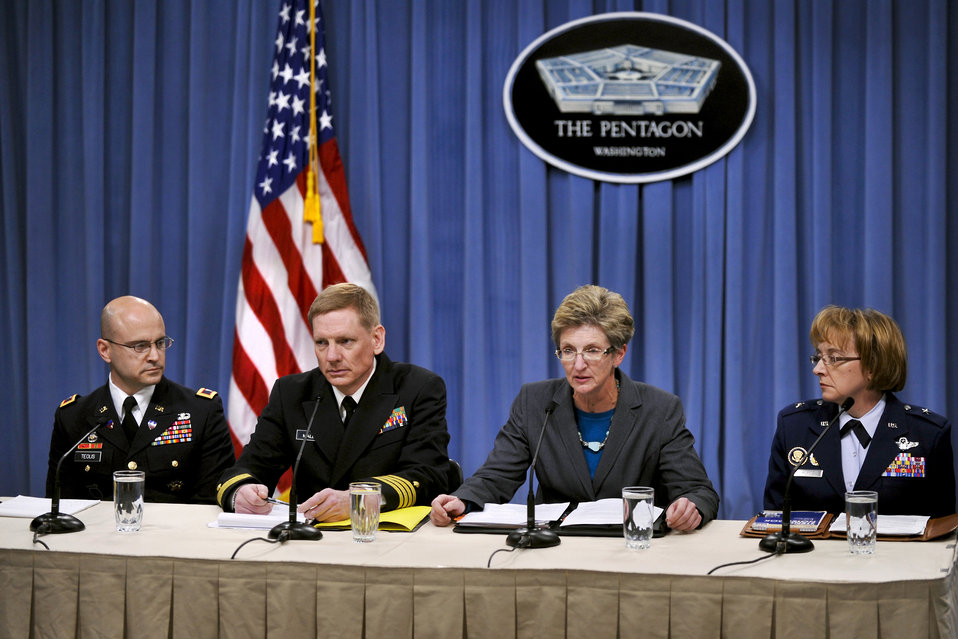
Dover mortuary operations

Jo Ann Rooney, acting undersecretary of defense for Personnel and Readiness, second from right, briefs the press on the release of “Appendix E” documents for the Dover Port Mortuary timeline in the Pentagon briefing room, March 30, 2012. Also attending the briefing were Army Col. Richard Teolis Jr., director of the Army’s Casualty and Mortuary Affairs, left; Navy Capt. Craig Mallak, Dover medical examiner; and, far right, Air Force Brig. Gen. Eden J. Murrie, director of Air Force Services.